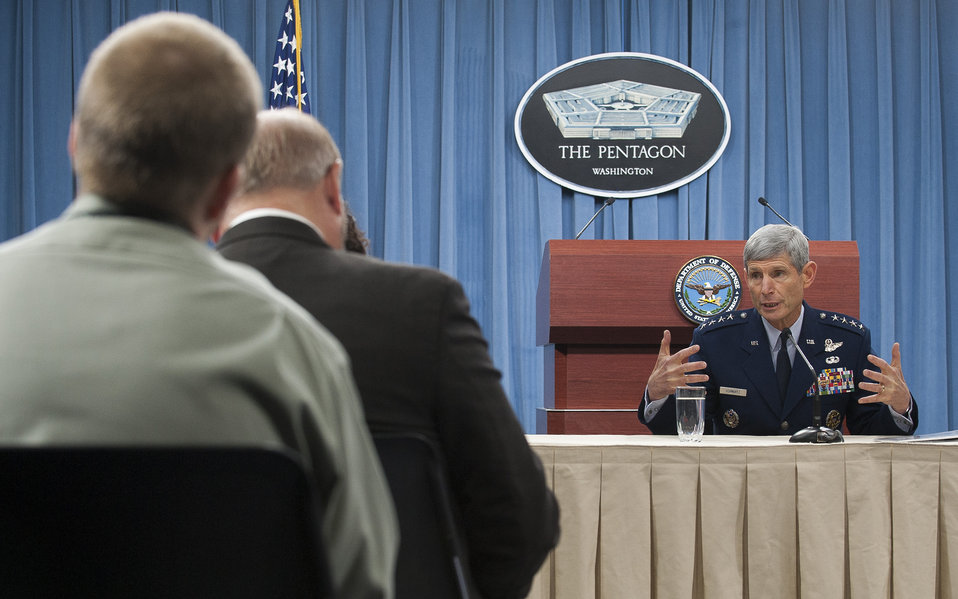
Quantity not quality is reason for F-22 problems

Air Force Chief of Staff Gen. Norton Schwartz responds to questions in the Pentagon on July 24, 2012, during a media availability to discuss Air Force accomplishments during his time as Chief of Staff. Schwartz said the Air Force has data indicating the cause of the F-22 Raptor's hypoxia-related incidents stem from the quantity, not the quality, of oxygen available in the cockpit.